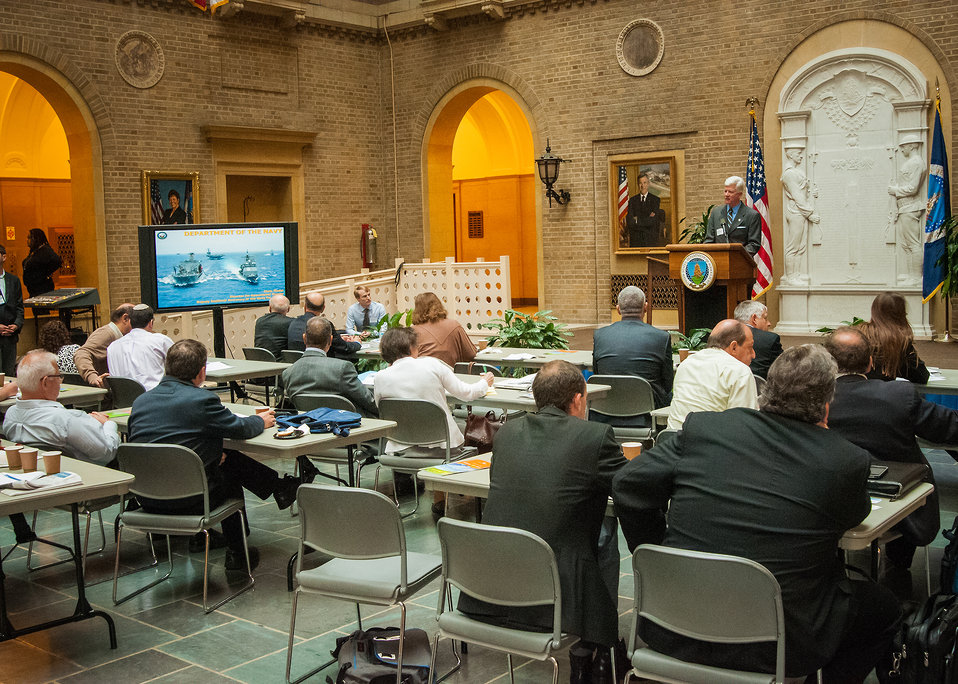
Office of the Deputy Assistant Secretary of the Navy for Energy Director for Operational Energy Chris Tindal discusses the Department of Defense’s (DOD) role in Biofuels at the U.S.-Israel Bio-Challenge Symposium at the U.S. Department of Agriculture (USDA) in Washington, D.C. on Thursday, Apr. 18, 2013.